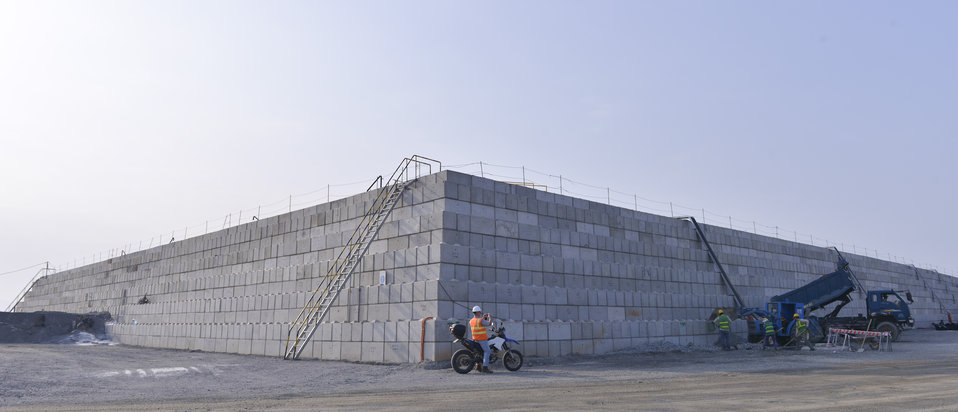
The containment and treatment structure at the Danang Airport Project site.

March 24, 2014.